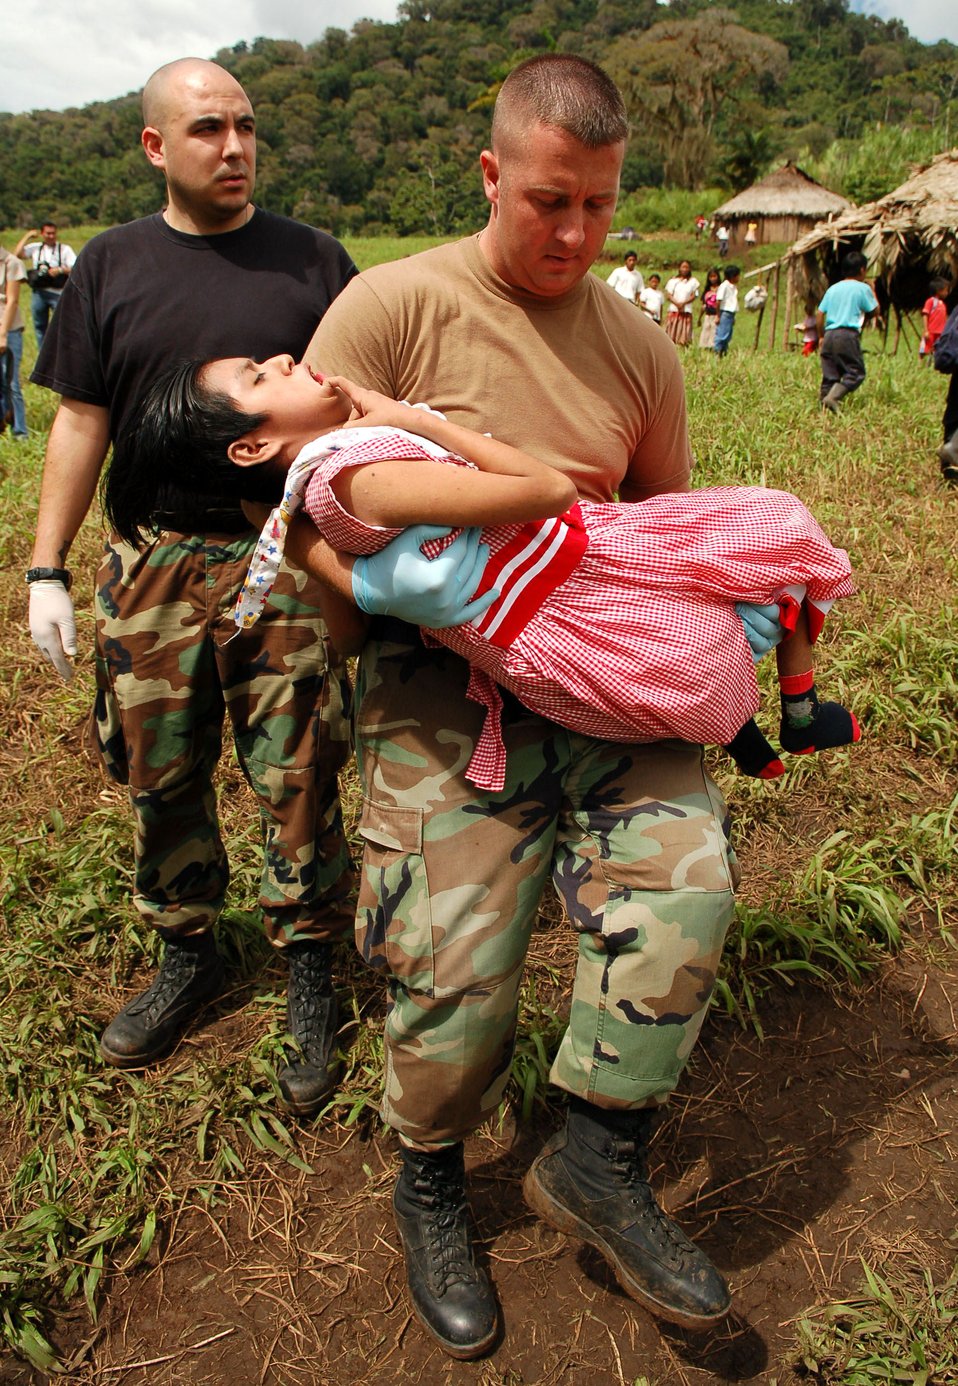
American servicemembers deploy to Costa Rica

Staff Sgts. Steven Geist (left) and David Pagani take a young Costa Rican girl with cerebral palsy who has been diagnosed with pneumonia to a waiting helicopter to be air evacuated from a makeshift clinic to a hospital in Limon Dec. 18 from Piedra Mesa, Costa Rica. Sergeants Geist and Pagani are assigned to the Joint Task Force-Bravo medical element. JTF-Bravo deployed 28 servicemembers from Soto Cano Air Base, Honduras, to Costa Rica at the invitation of the country's ministry of health for a medical readiness training exercise.